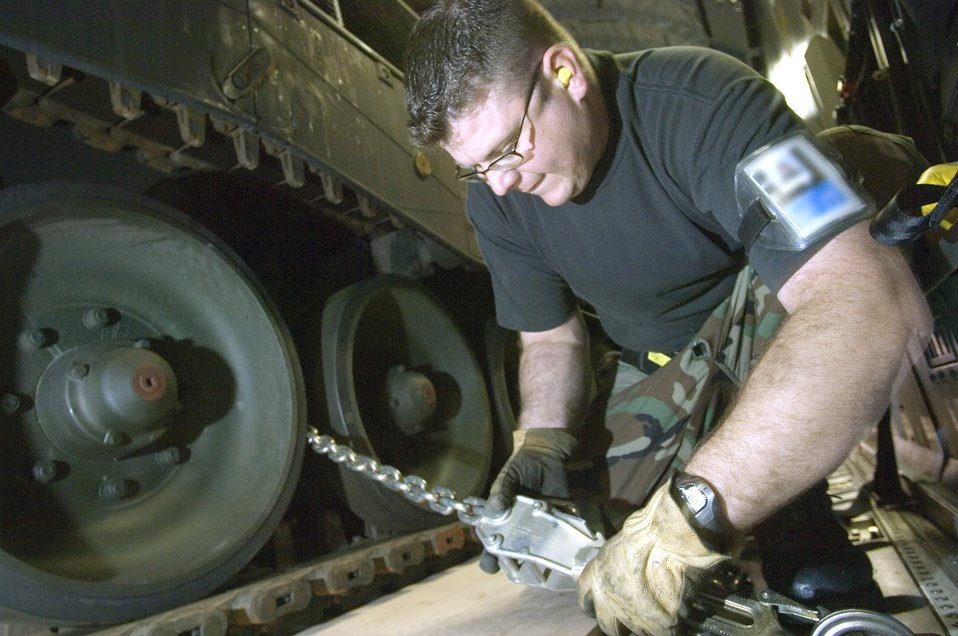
Howitzer takes flight

Staff Sgt. Harold Gray fastens one of 29 chains to the floor securing the Netherlander Howitzer 2000 on a C-17 Globemaster III at Ramstein Air Base, Germany, Sept. 6. Sergeant Gray is an air transportation journeyman with Ramstein's 723rd Air Mobility Squadron. The 60-ton tank will be flown to Afghanistan on board a C-17 from Charleston Air Force Base, S.C.